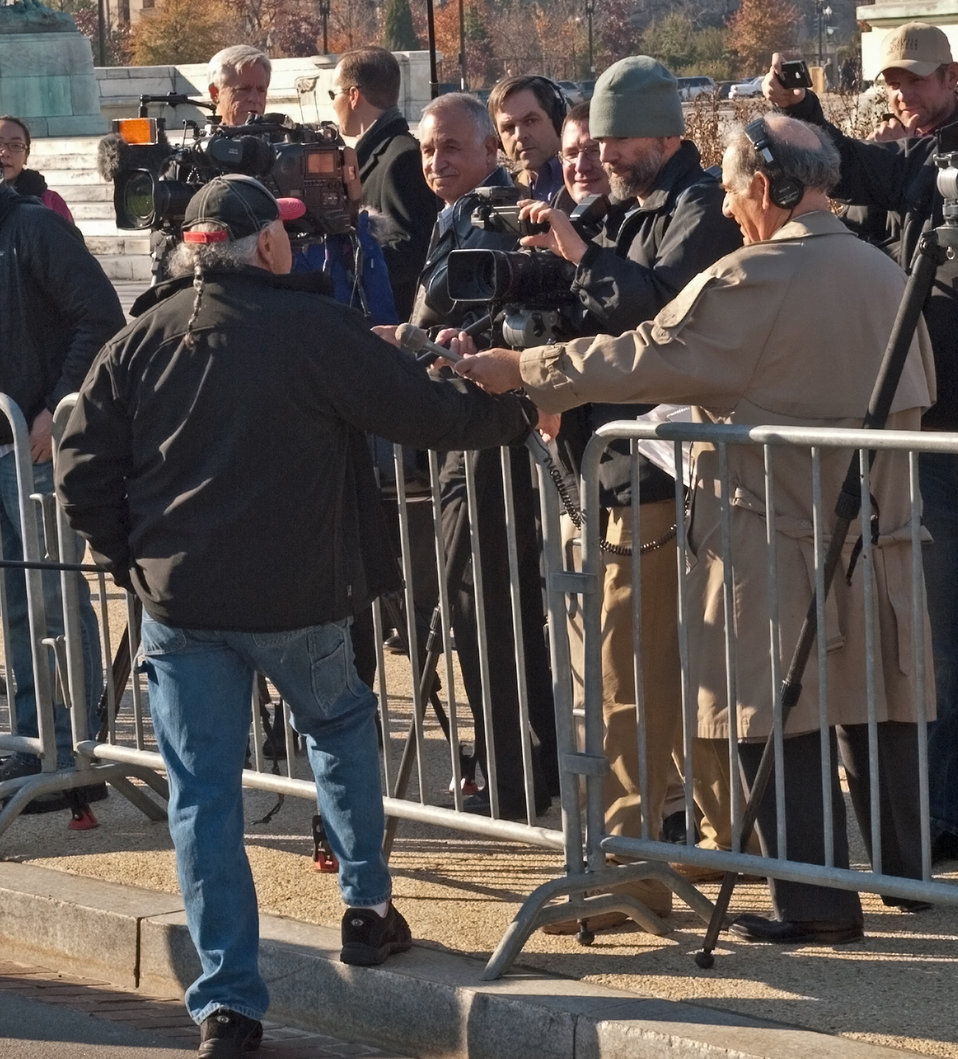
Former Colorado Senator Ben Nighthorse Campbell is interviewed after driving the 2012 Capitol Christmas Tree to Washington, D.C. on Nov.26, 2012. The 73-foot Englemann spruce traveled from the White River National Forest in Colorado.